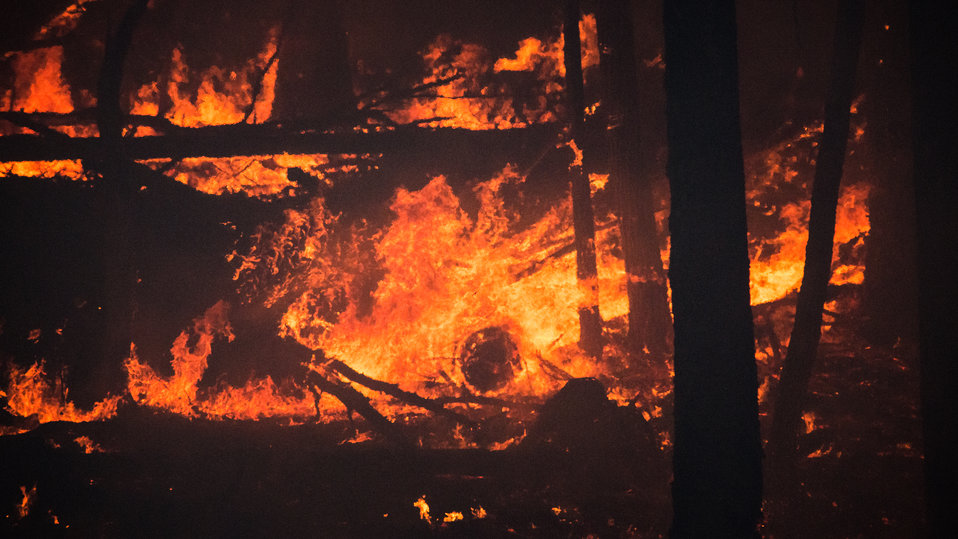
Geronimo Interagency Hotshot Crew, Department of the Interior (DOI) Indian Affairs (IA) Bureau of Indian Affairs (BIA) San Carlos Agency in Arizona; on assignment at the Big Windy Complex Wildlands Fire, approximately 15 miles west of Interstate-5 and East Northeast of Galice, Oregon, conducts a prescribed burn 'burnout' operation to help stop the main fire that may head toward this roadway, on Friday, Aug 9, 2013. The primary mission of the Interagency Hotshot Crews (IHC) is to provide a safe, organized, mobile and highly skilled hand crew for all phases of wildland fire suppression. The arduous duties and specialized assignments required of IHC personnel require uniform staffing, certification, training, equipment, communications, transportation, organization, and qualifications that adhere to interagency standards and guidelines.